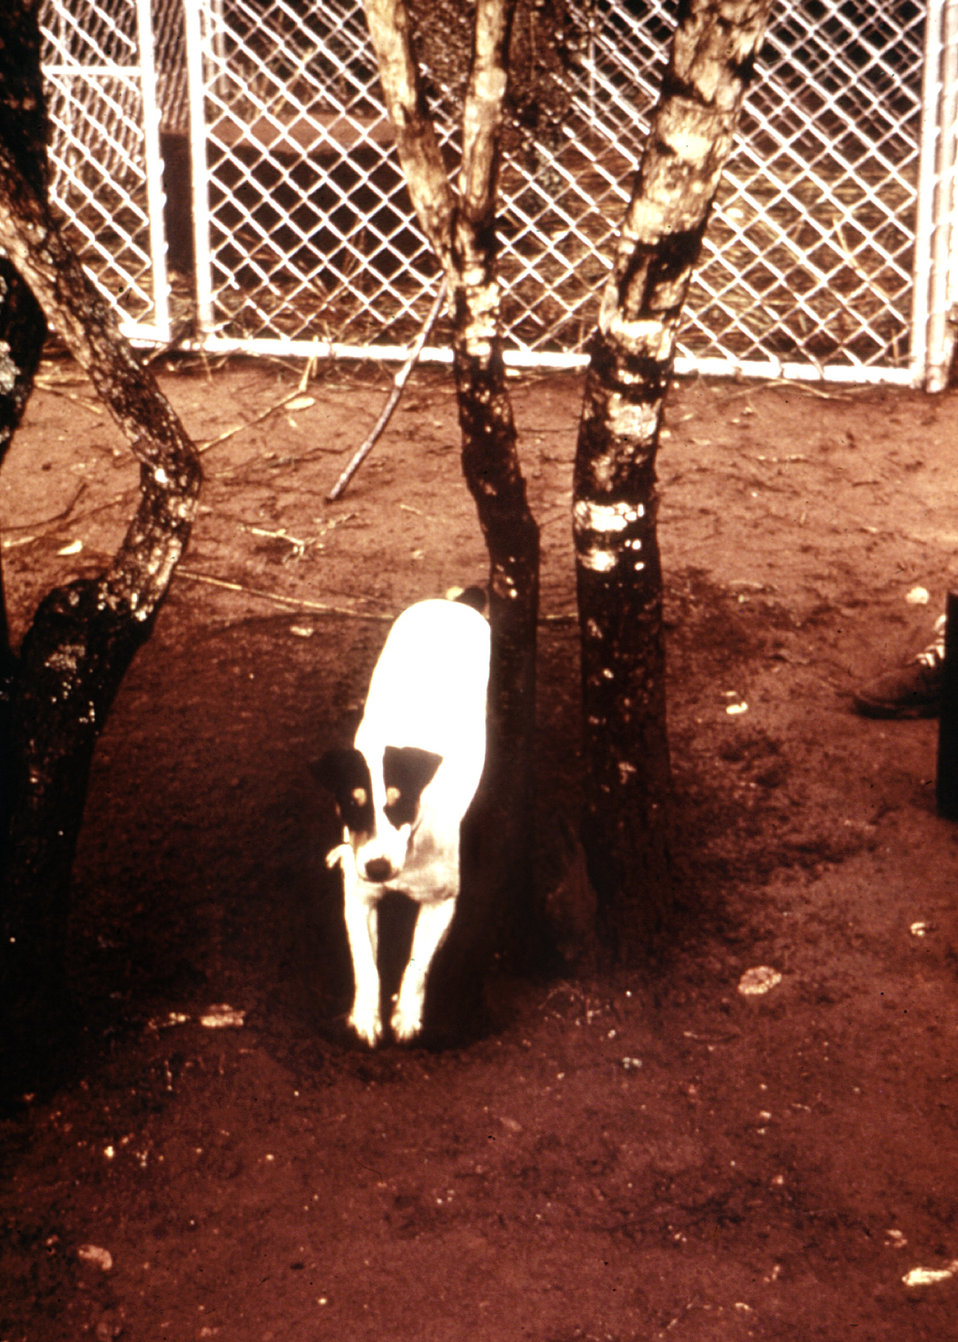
This dog had played with a Marburg patient during an early phase of the incubation period while traveling in South Africa.